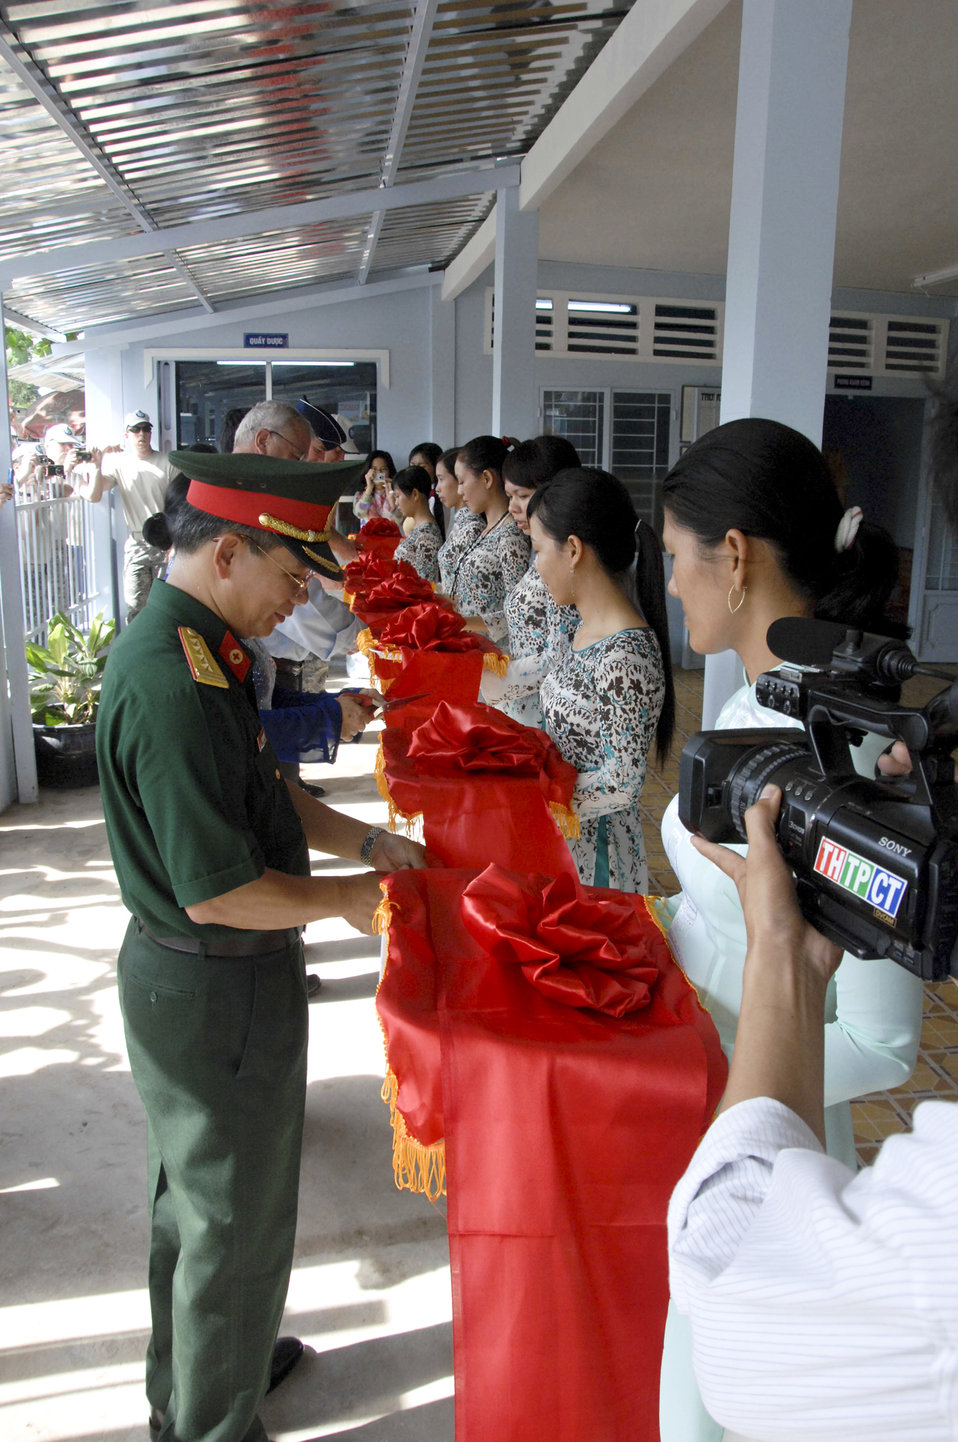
Operation Pacific Angel concludes

Vietnamese Col. Van Tham and others cut a ribbon marking the re-opening of the Tan Thoi Village Medical Clinic as part of Pacific Angel 2010 May 17, 2010, in Tan Thoi, Vietnam. Colonel Tham is from the Vietnam Military Region 9.